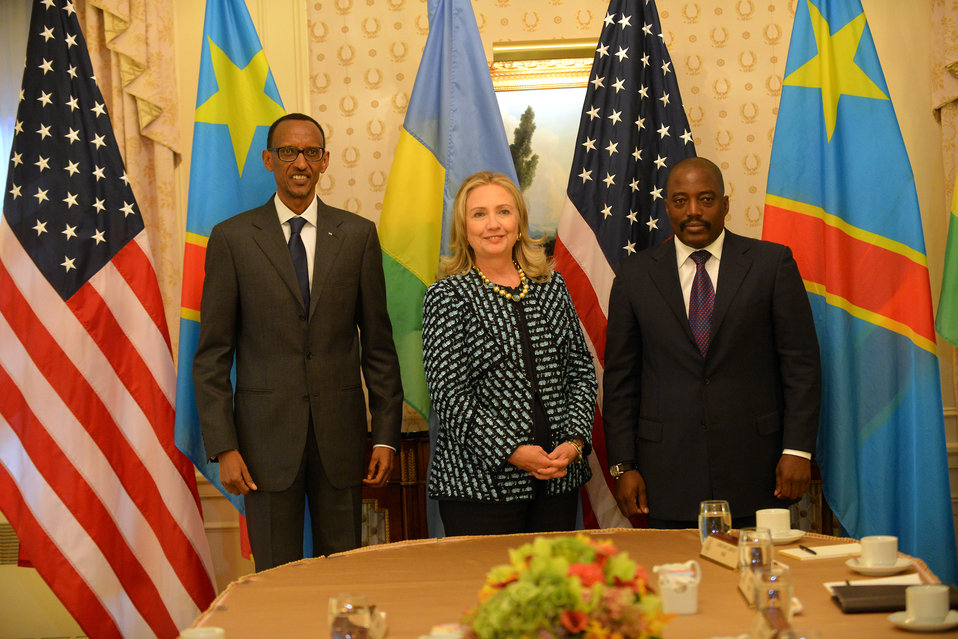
Secretary Clinton Meets With Congolese President Kabila and Rwandan President Kagame

U.S. Secretary of State Hillary Rodham Clinton meets with Congolese President Joseph Kabila and Rwandan President Paul Kagame in New York, New York on September 24, 2012.